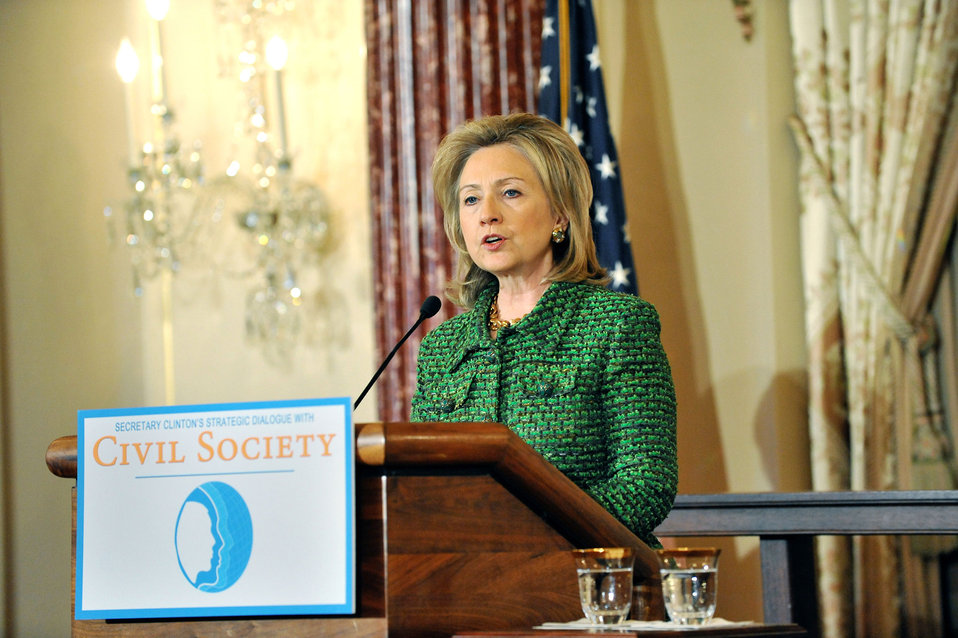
Secretary Cilnton Delivers Remarks

U.S. Secretary of State Hillary Rodham Clinton delivers remarks at the first ever Strategic Dialogue With Civil Society at the U.S. Department of State in Washington, D.C., on February 16, 2011.